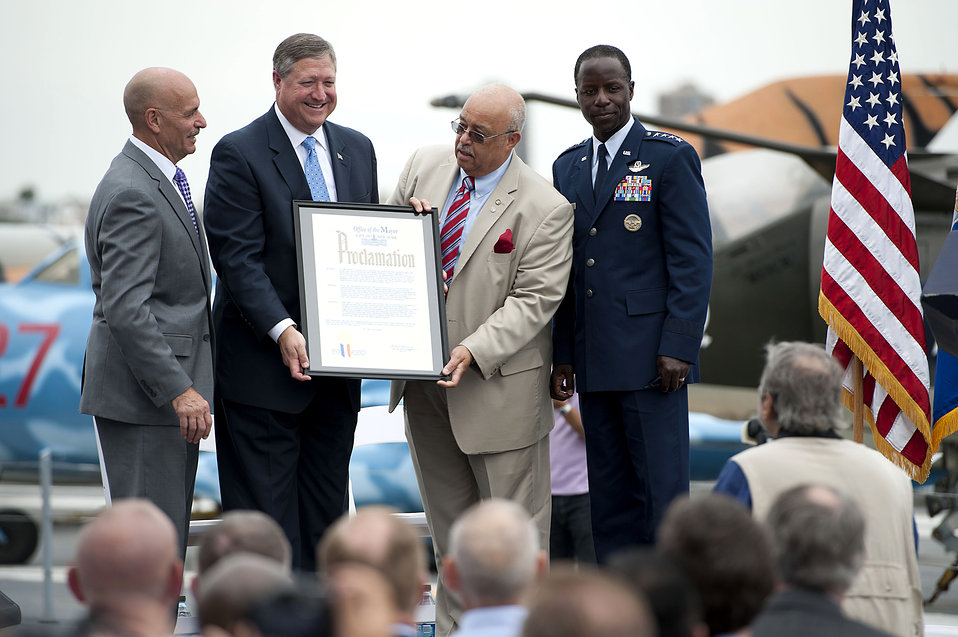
2012 Air Force Week NYC

The commissioner of the New York City mayor's Office of Veteran Affairs, Terrance R. Holliday, center, delivers the proclamation stating that the week of August 19-22 is officially Air Force Week in New York City on Aug. 19.